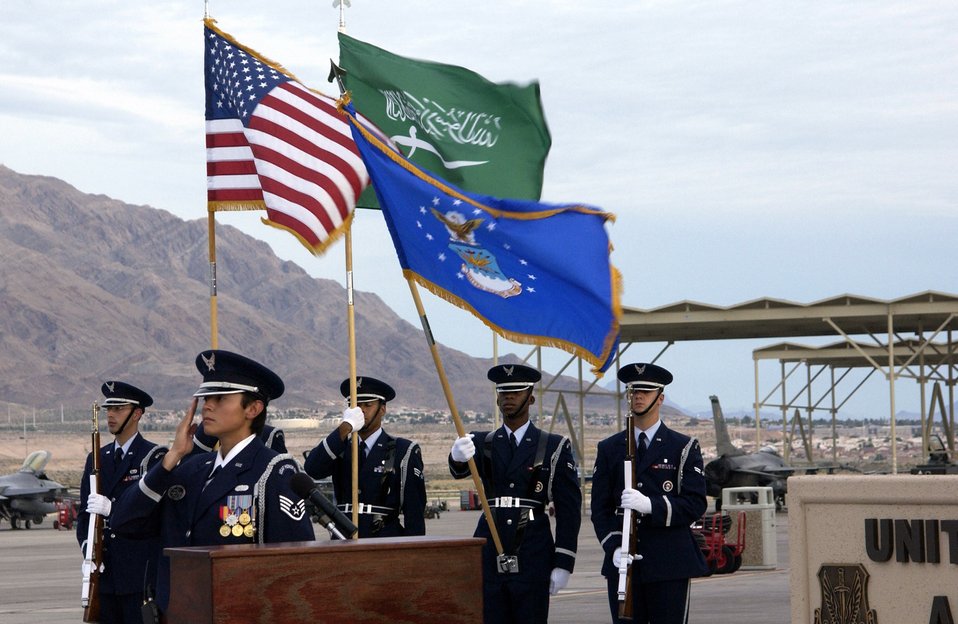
Red Flag Exercise

NELLIS AIR FORCE BASE, Nev. -- Members of the U.S. Air Force Honor Guard, Bolling Air Force Base, Washington, D.C., and the Nellis Base Honor Guard present the national colors of Saudi Arabia and the United States upon the arrival of His Royal Highness Prince Khalid bin Sultan bin Abd al-Aziz al Saud of Saudi Arabia here recently.